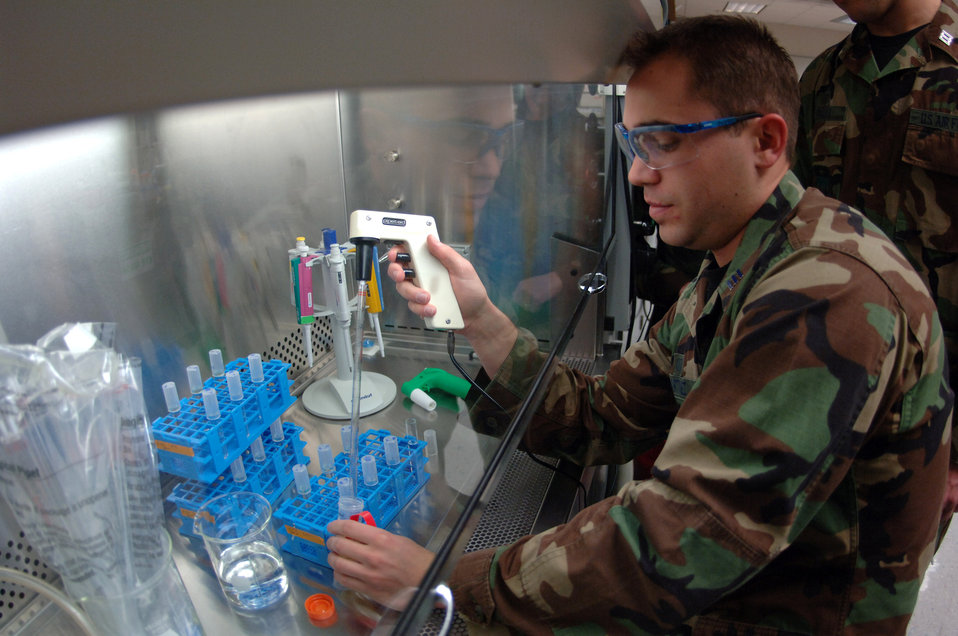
Cadets research fuel line bacteria

Cadet 1st Class Brandon Martinez transfers bacteria from jet fuel into culture tubes in a laboratory at the U.S. Air Force Academy in Colorado Springs, Colo. The bacteria eat jet fuel and produce a slime that can foul jet engines. Academy cadets perform this research as part of their curriculum.